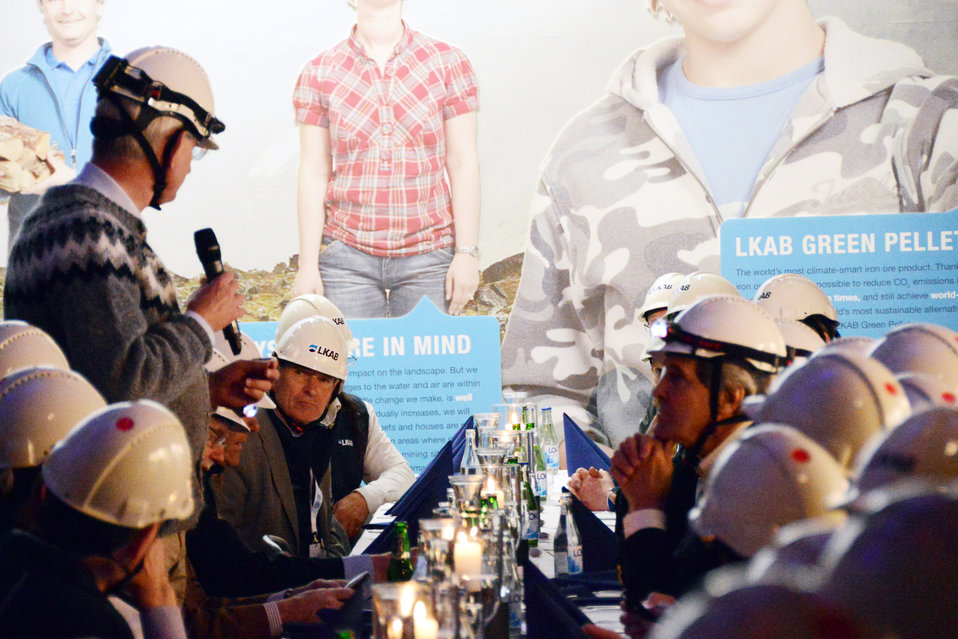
Secretary Kerry Visits the LKAB Mine

U.S. Secretary of State John Kerry listens, with the Arctic Council Ministers, listens as Swedish Prime Minister Carl Bildt speaks in the Luossavaara-Kiirunavaara Aktiebolag (LKAB) mine in Kiruna, Sweden, on May 15, 2013.